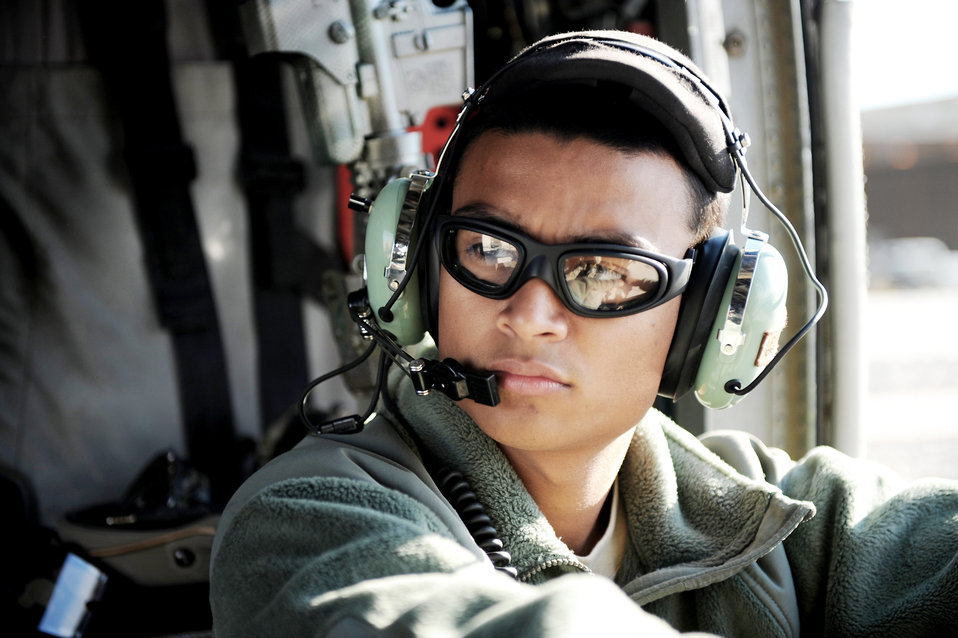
Total-Force Airmen to the rescue in Afghanistan

Senior Airman Harvey Gonzales waits onboard a HH-60G Pave Hawk prior to a medical evacuation mission, Jan. 10, 2010, at Kandahar Airfield, Afghanistan. Airman Gonzales is a crew chief with the 66th Expeditionary Rescue Squadron,